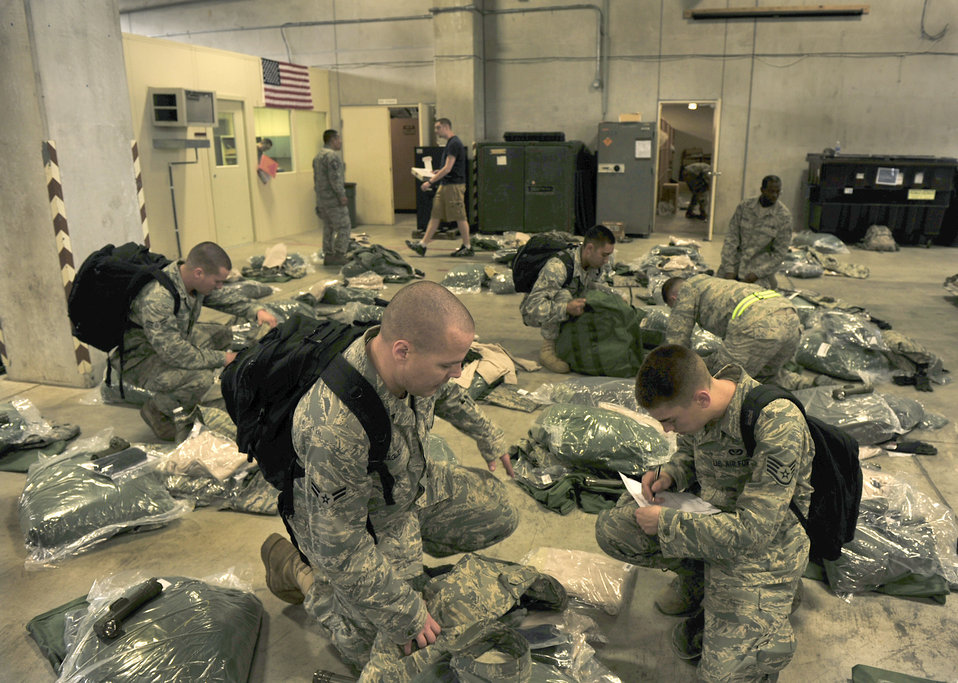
18 CEG push north to aid Misawa AB

Members of the 18th Civil Engineer Group go over check list and prepare mobility bags to head north to Misawa Air Base, here at Kadena Air Base, March 12. 18th CEG members will assist Misawa personnel with regaining the electronic and power capabilities.